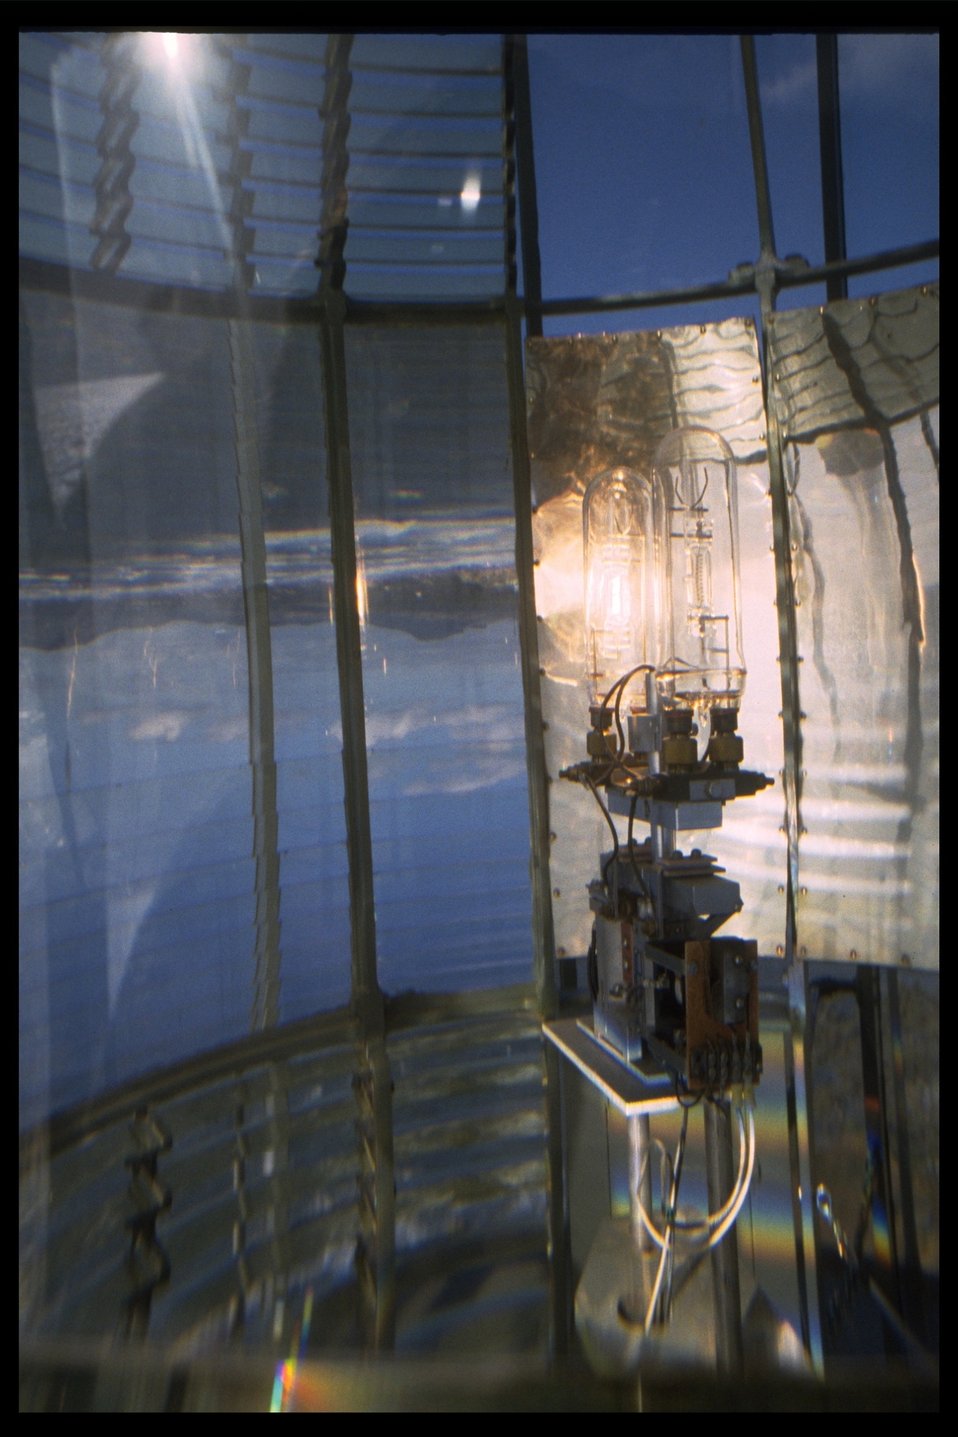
The lightbulb (1000 watt lens) on the interior of the Yaquina Head lighthouse.